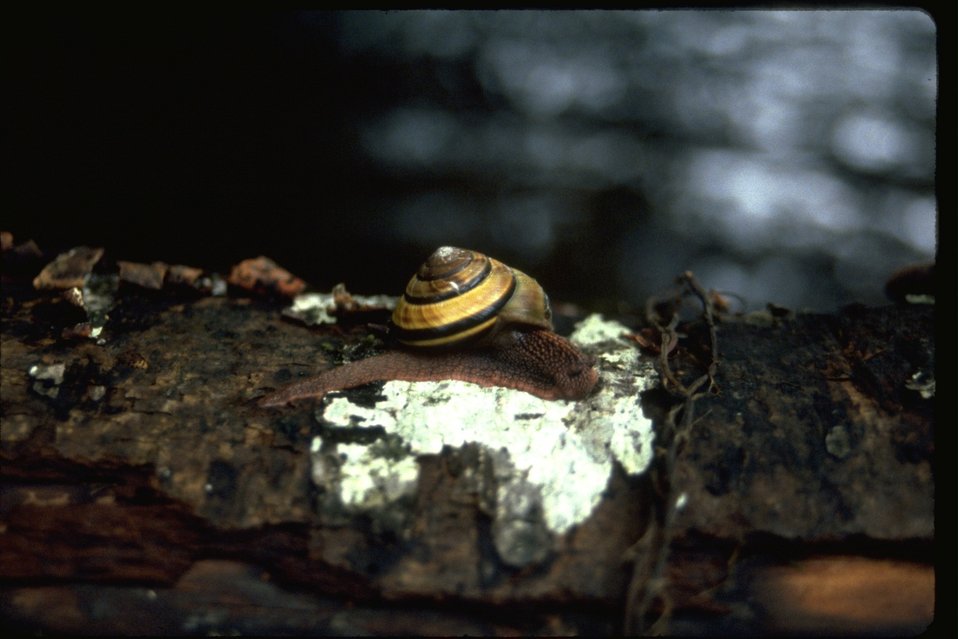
Macro shot of a snail.